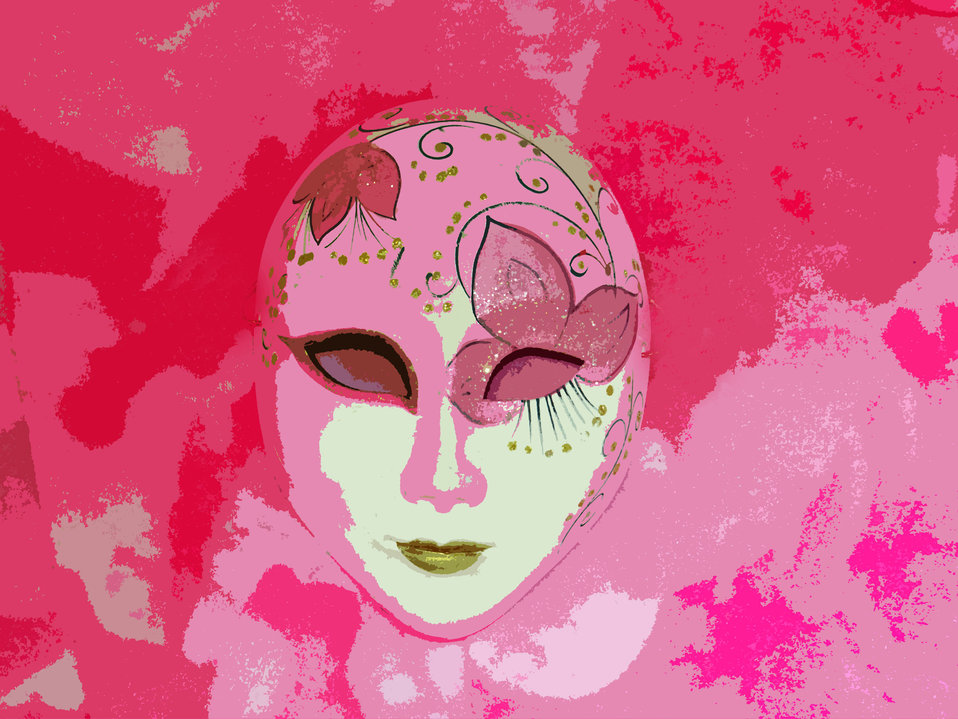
Abstract face with shades of pink and red white and some gold..